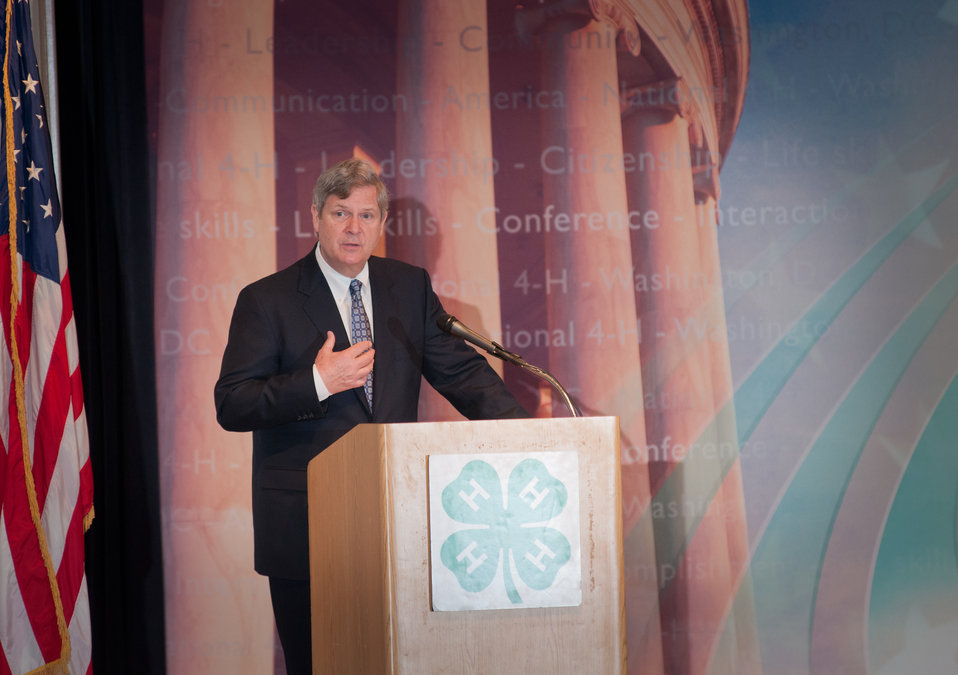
U.S. Department of Agriculture (USDA) Secretary Tom Vilsack delivers the keynote remarks to approximately 300 youth members, Extension Educators and 4-H Adult Volunteers from across the nation, as well as U.S. Territories at the 2013 National 4-H Conference, on Monday, April 8, 2013 in Chevy Chase, MD. Also speaking at the event is Agriculture Departmental Management Office of Advocacy and Outreach Director Carolyn Parker and National Institute of Food and Agriculture Director Dr. Sonny Ramaswamy. The youth delegates are in grades 10-12 (15-19 years old). The purpose of the conference is to 1) engage 4-H youth in personal development experiences that will increase knowledge, resources, and skills; 2) discuss topics affecting youth and 4-H programming nationwide; and 3) empower and mobilize 4-H youth to create positive social change in their communities in a meaningful and genuine way. The conference also reinforces the rich history of 4-H and its valuable tie to USDA, Cooperative Extension and the Land-Grant University System.